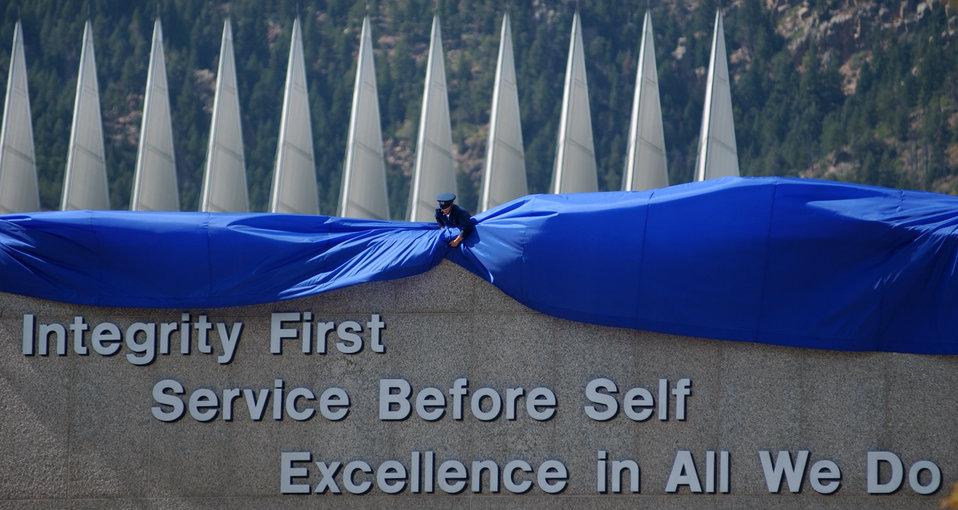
Writing on the wall

U.S. AIR FORCE ACADEMY, Colo. -- An Air Force Academy cadet helps unveil the service core values during a ceremony here Sept. 29. The core values replaced the poetic reference "Bring me men ..." after Air Force leaders decided the words were out of step with the current culture, as well as offensive to many people. Secretary of the Air Force Dr. James G. Roche and Air Force Chief of Staff Gen. John P. Jumper attended the unveiling.